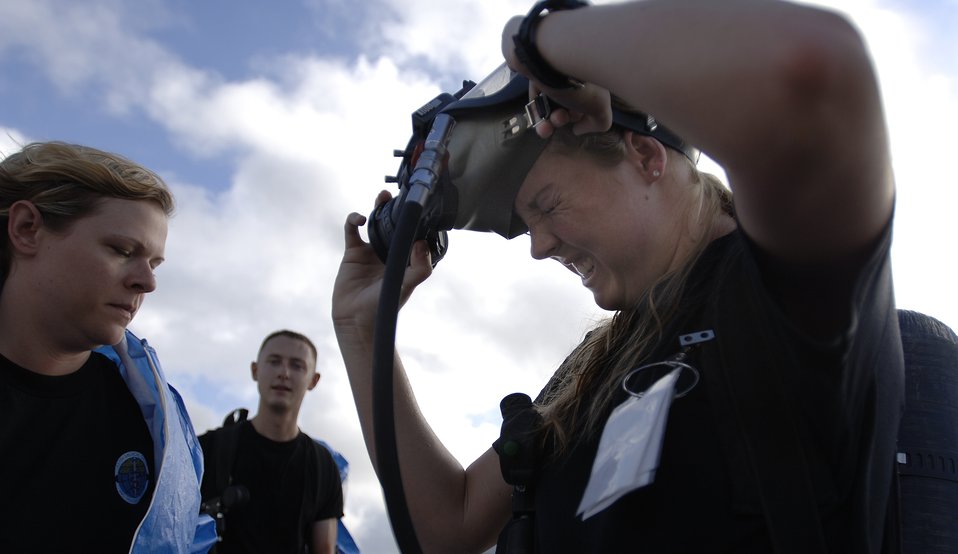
Airmen compete in training challenge

Senior Airman Rebecca Carey removes her gas mask after inspecting a simulated ambulance crash scenario at the Chemical Biological Radiological Nuclear Challenge at Brooks City-Base, San Antonio, Sept. 15. Airman Carrey is a participant from Air Mobility Command.